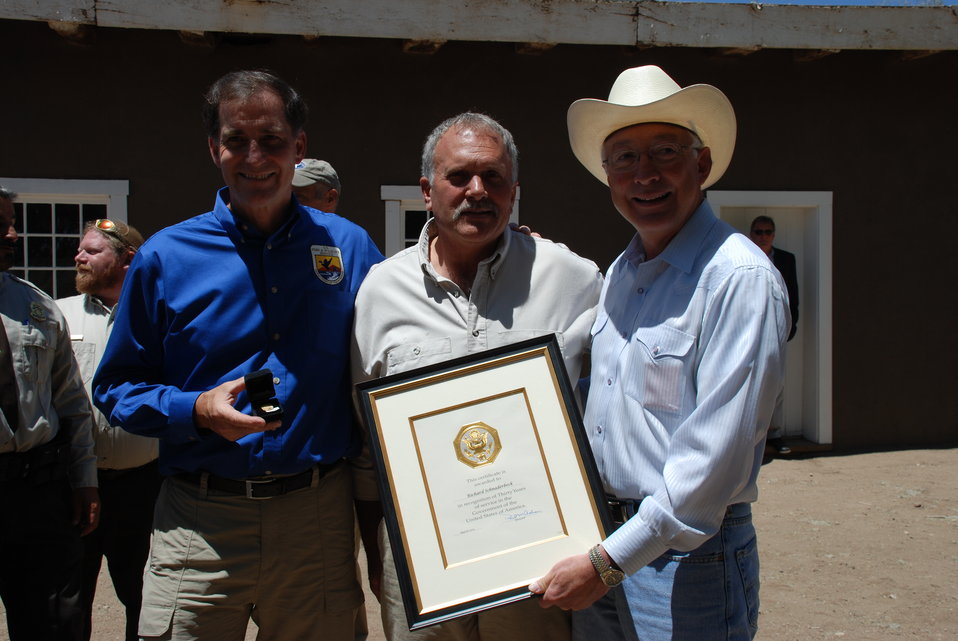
Award Ceremony

Interior Secretary, Ken Salazar, and U.S. Fish and Wildlife Director, Dan Ashe, present Rick Schnaderbeck with an award for his many accomplishments throughout his 30 years with the Service.